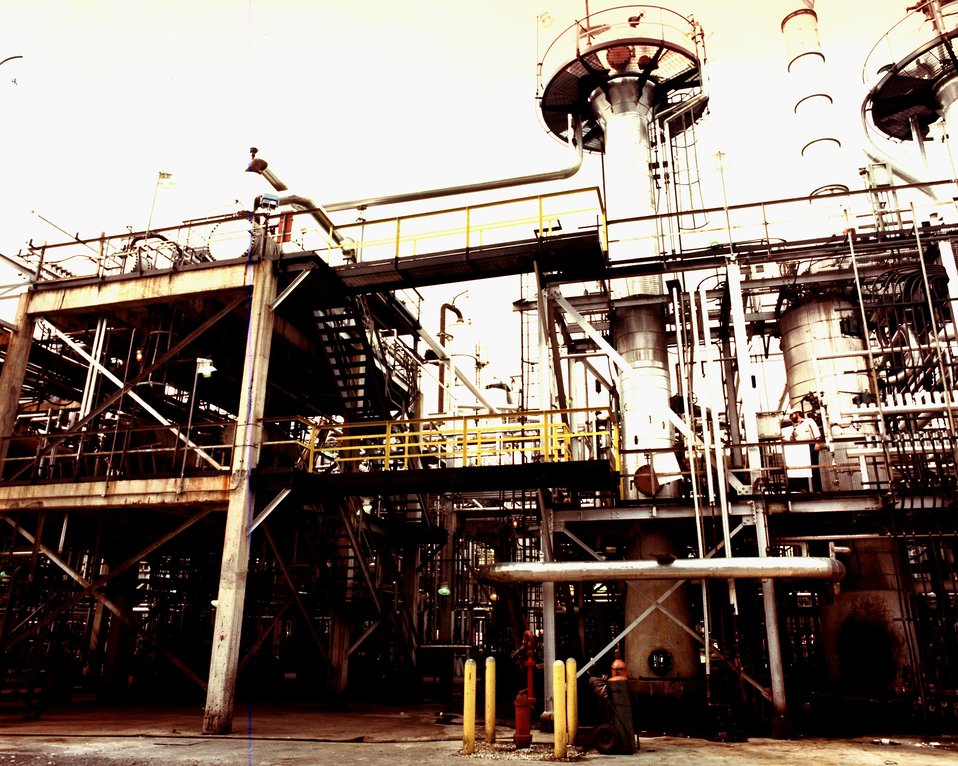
PART OF THE H-COAL PILOT PLANT WHICH CONVERTS COAL TO SYNTHETIC OIL.